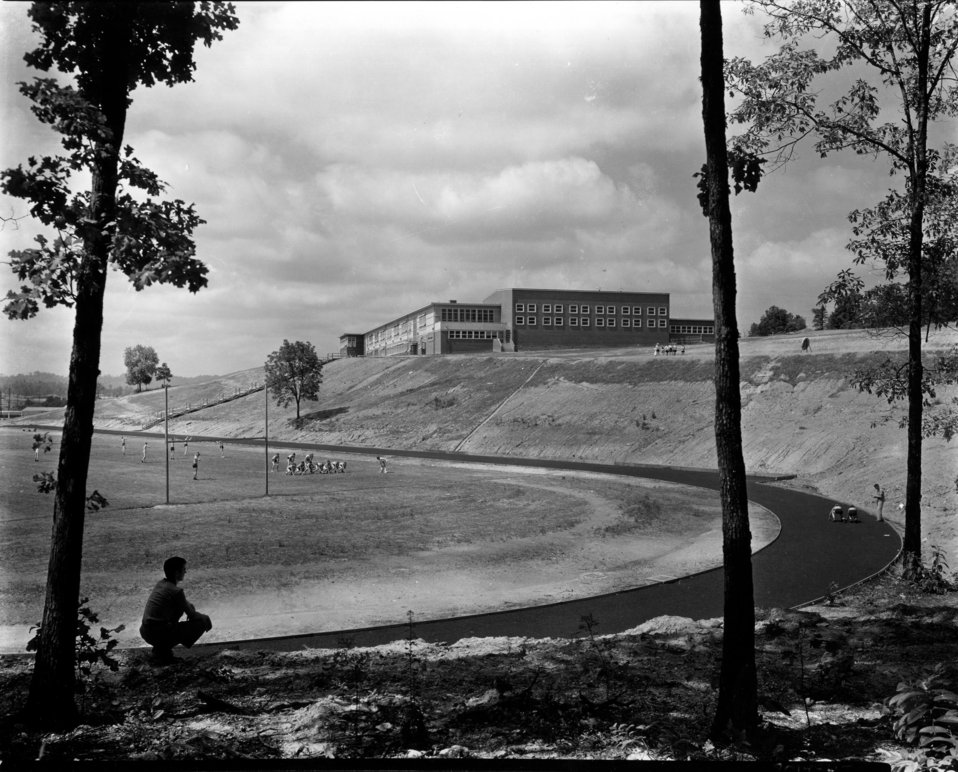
Schools at Oak Ridge